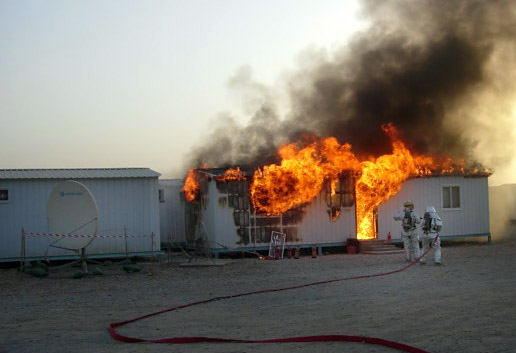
ALI BASE, Iraq -- Firefighters from the 407th Expeditionary Civil Engineer Squadron put out a fire Aug. 15 at a trailer behind the dining facility on the Army side of the installation just hours after they accepted fire protection responsibilities for the entire post.